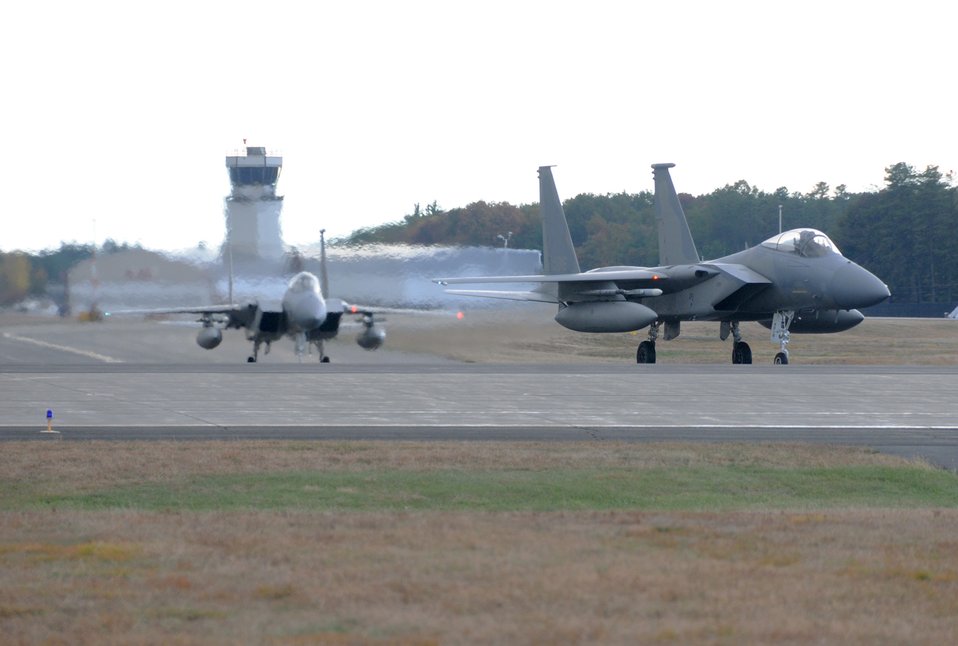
Training with the eagles

F-15 Eagles head to the hangar after participating in training Oct. 21, 2010, at Barnes Air National Guard Base, Mass. The Massachusetts Air National Guard's 104th Fighter Wing provides air sovereignty alert support, protecting the northeastern United States.